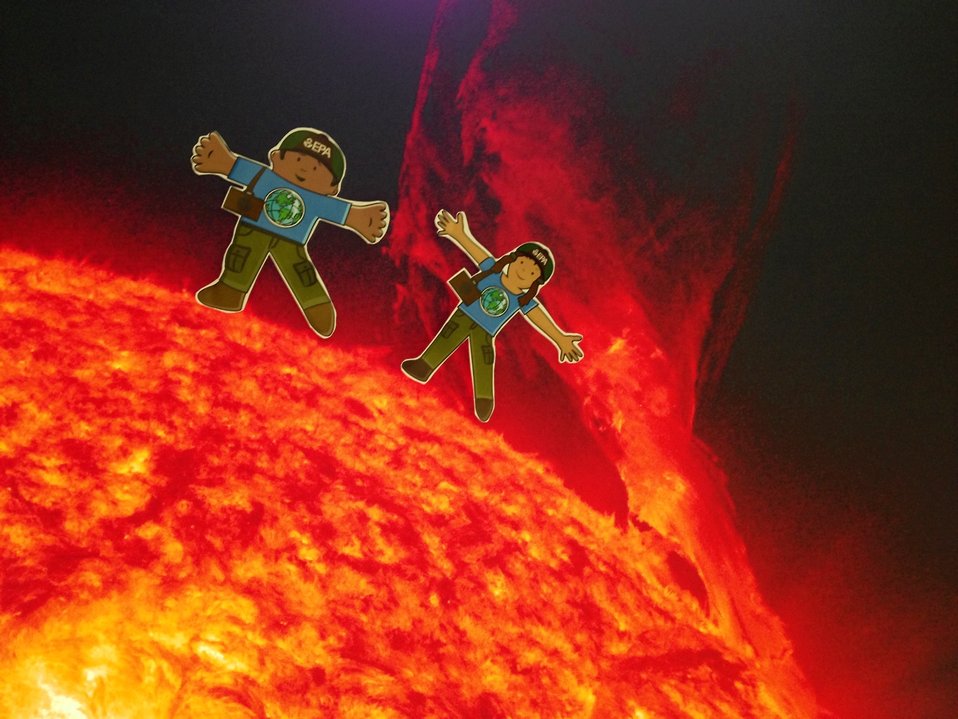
Hot off the press! Stella and Stanley Study the Sun

EPA's Stella and Stanley take a trip to the sun with the help of NASA and scientists at the Goddard Space Center. Check out what they learn and share it with kids near you. Great resources available for teachers, parents, and caregivers are available at our blog: blog.epa.gov/stanleyandstella. Take a picture with your Stanley and Stella and share it at www.flatterworld.com.